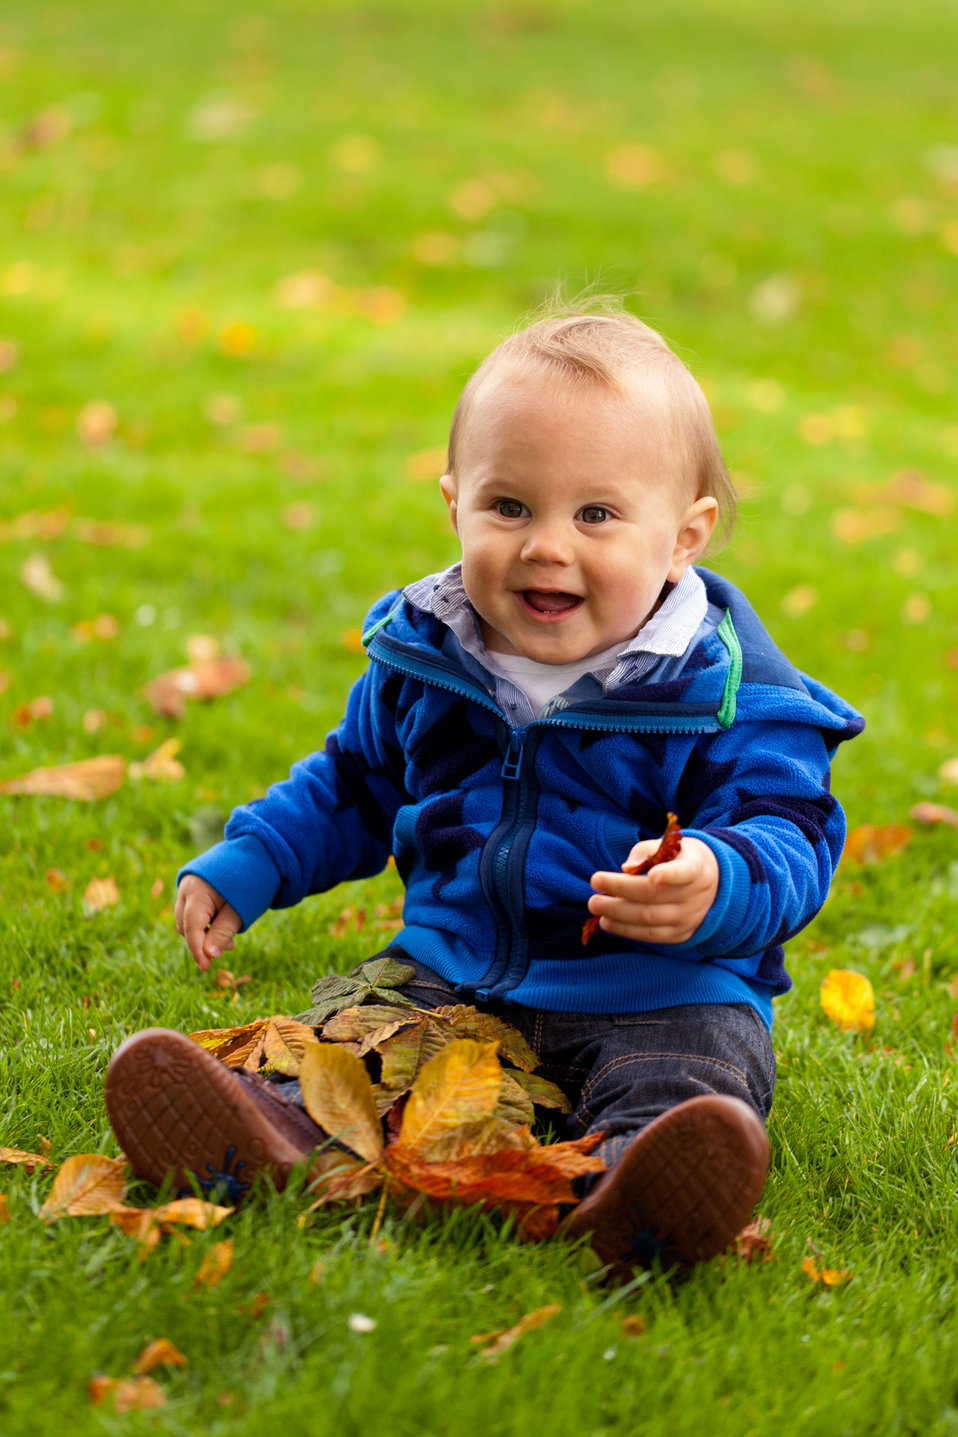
Baby playing in fall

Young baby boy is playing in a park in autumn.